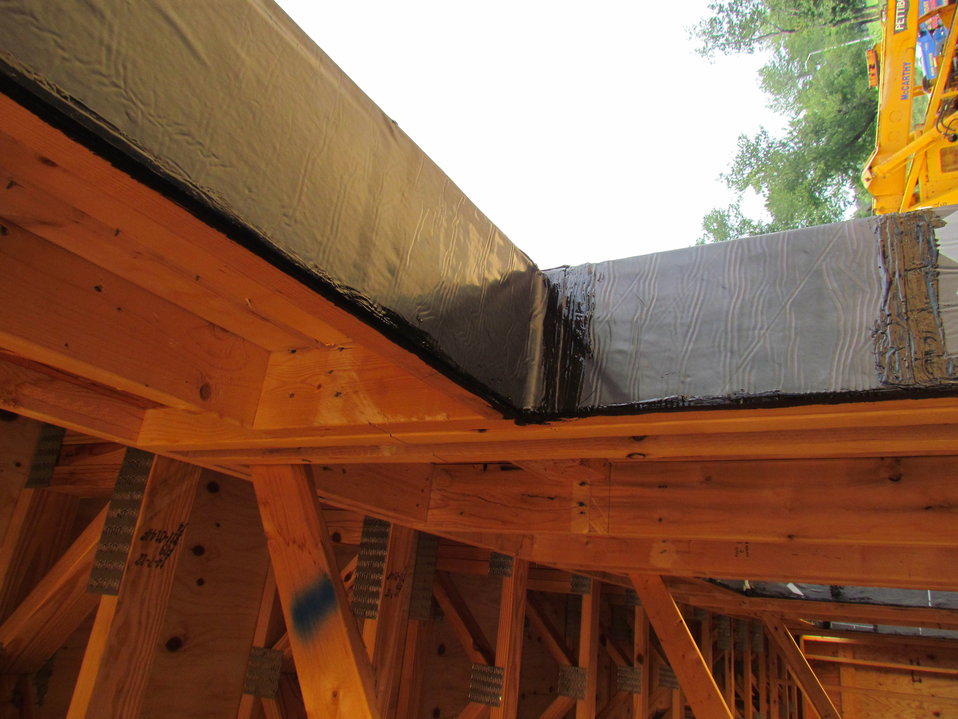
Net-Zero Energy Residential Test Facility - Photo showing detail of air/moisture barrier installation in window opening.